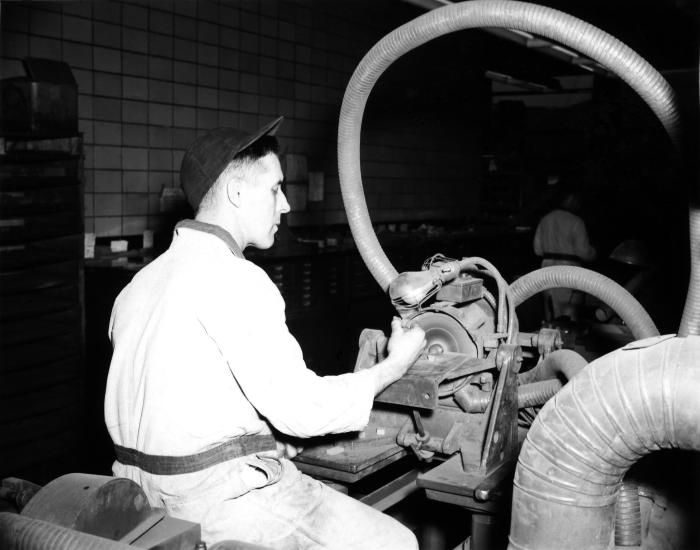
Though the man depicted in this 1946 historical photograph was seated next to a exhaust ventilation device inside a tungsten carbide (W2C) machine shop, he would have been even further protected had he been wearing a face mask filtration unit. Today's workers are warned to avoid inhalation of the very fine W2C dust; wear protective gloves to prevent skin contact; protect eyes from airborne dust contamination; avoid eating, drinking, or smoking while in the machine shop environment, which could lead to the ingestion of dust contaminants. This image was provided by the Center for Disease Control's (CDC), National Institute for Occupational Safety and Health (NIOSH).